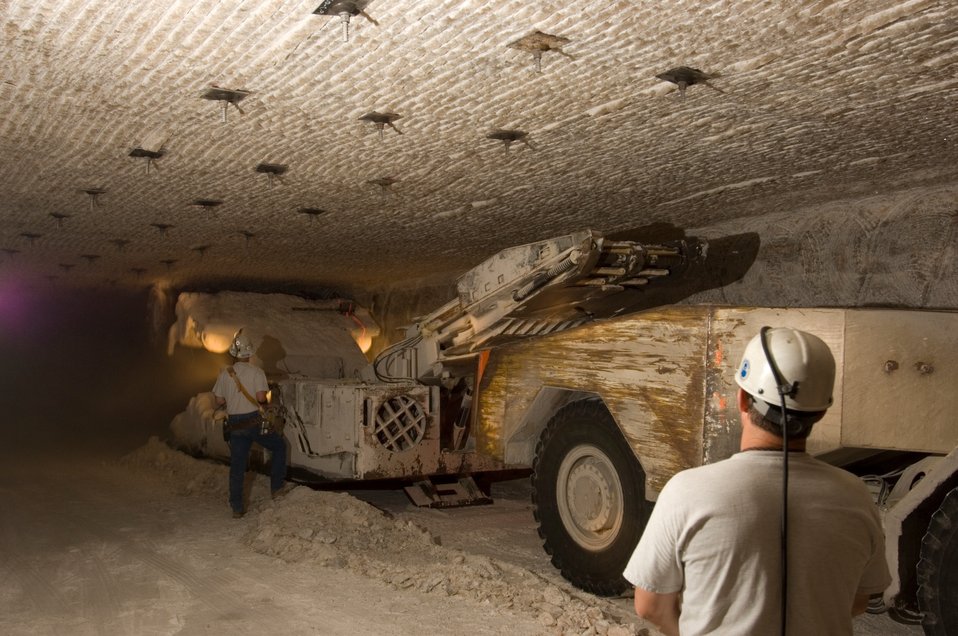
DOE Begins Mining Operations for Salt Disposal Investigations at WIPP

Mining crews at the Department of Energy’s Waste Isolation Pilot Plant mine the north end of the WIPP repository to support new salt studies.

Mining crews recently began tunneling areas in the north end of the 2,150-foot-deep Waste Isolation Pilot Plant (WIPP) repository to support a new round of salt studies. Known as the Salt Disposal Investigations (SDI), the studies are designed to test the geologic response of salt to elevated temperatures.